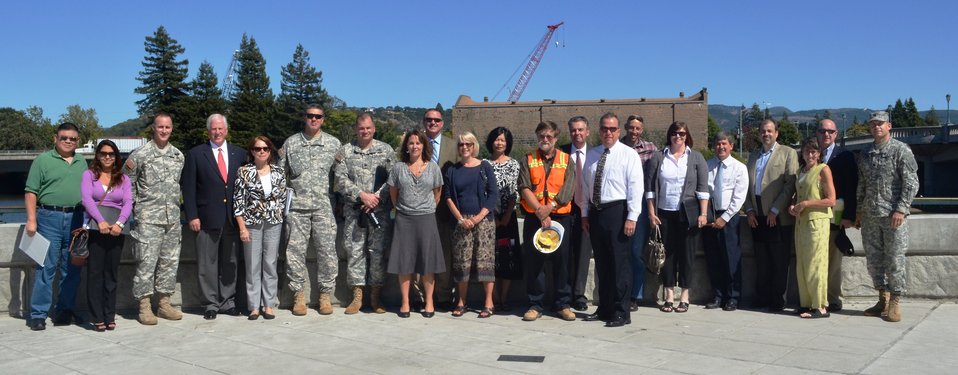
Tour of Napa flood risk reduction efforts

The group poses at the base of the Veteran's Memorial Amphitheater, part of the flood risk reduction construction that is both a floodway and a recreation site. (US Army Corps of Engineers/DeDe Cordell)